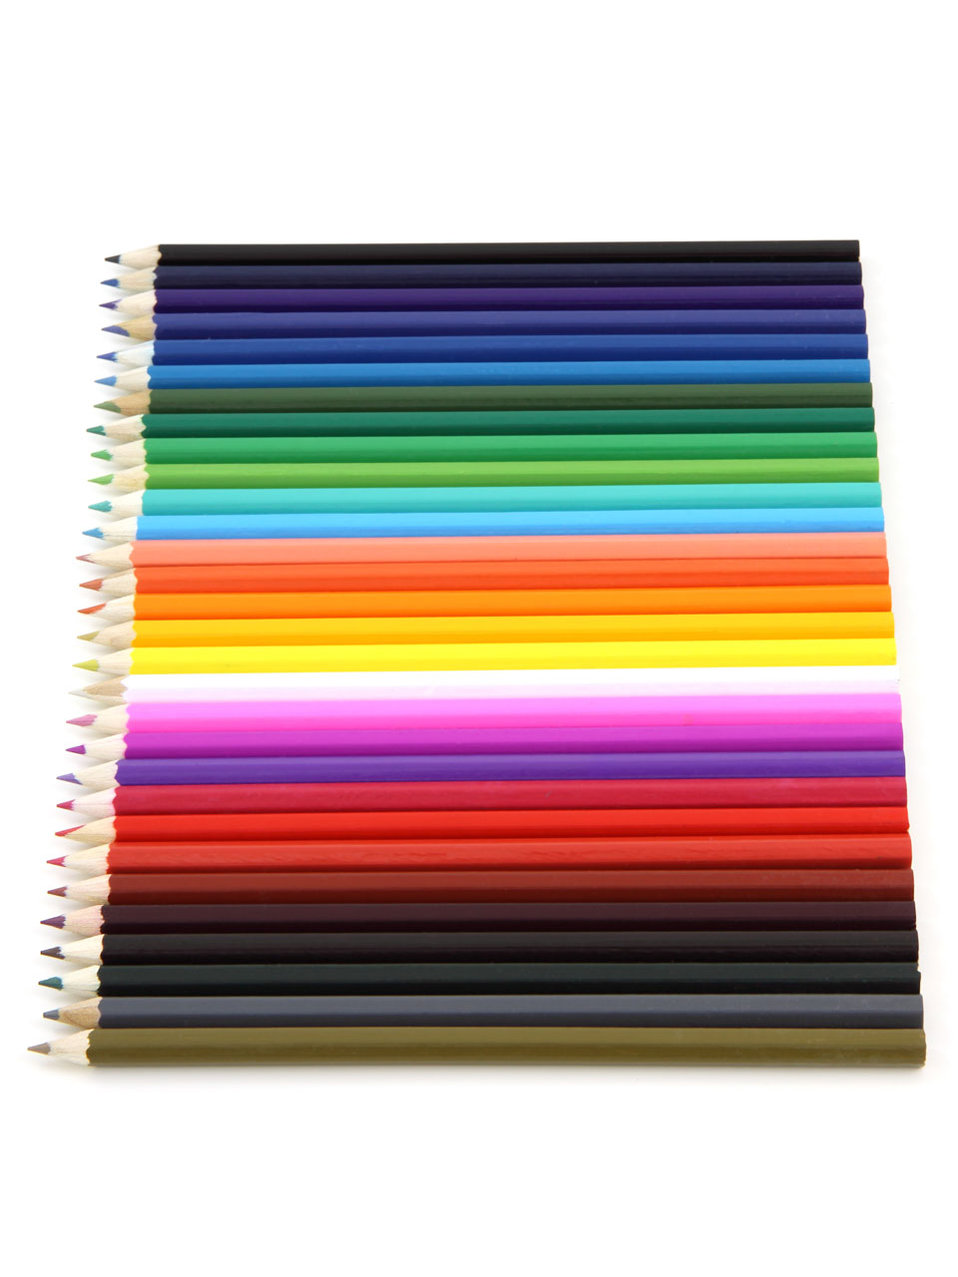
Coloured pencils

Colored pencils on white background.